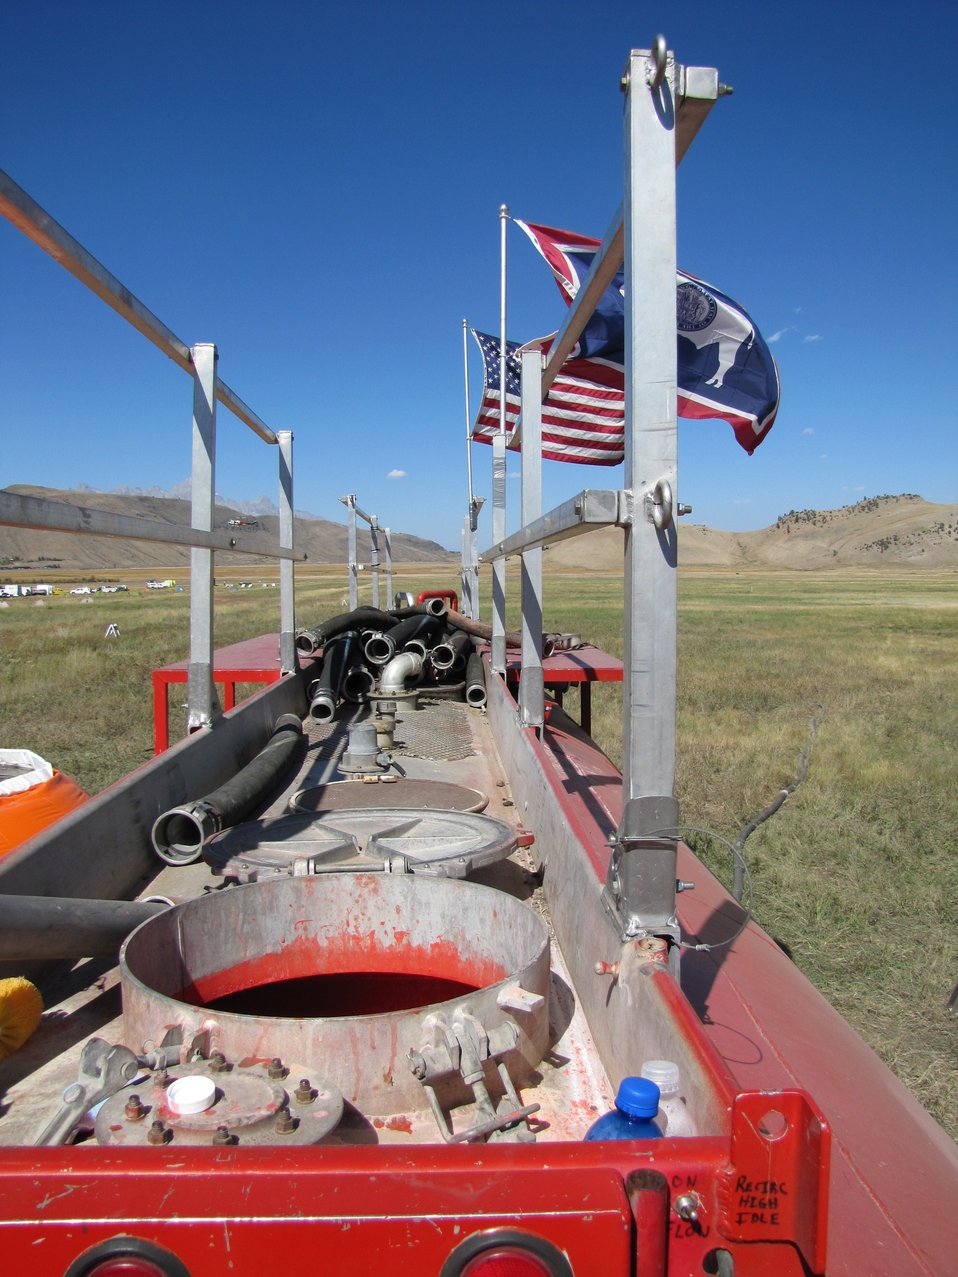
A Temporary Retardant Mixing Plant

One half of the portable mixing plant is filled with water, while the other half combines the retardant powder with water and stores the mixture until needed.